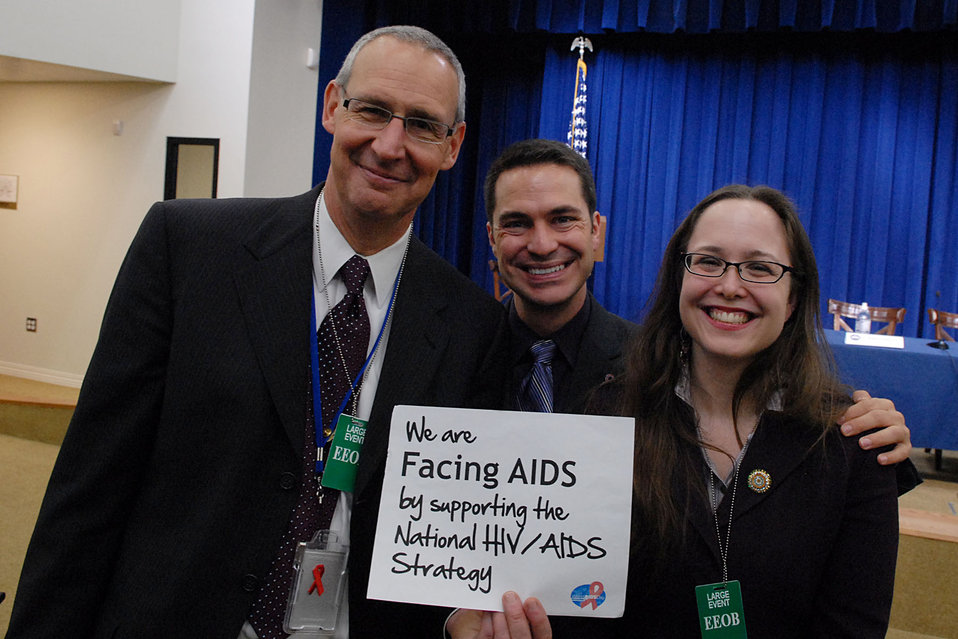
We are Facing AIDS by supporting the National HIV/AIDS Strategy